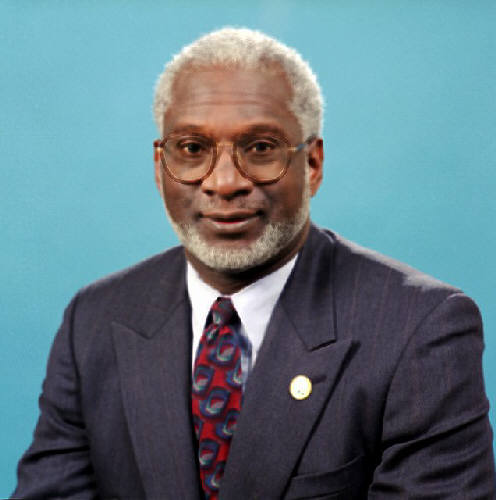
David Satcher, M.D., Ph.D., former Surgeon General and Assistant Secretary for Health.